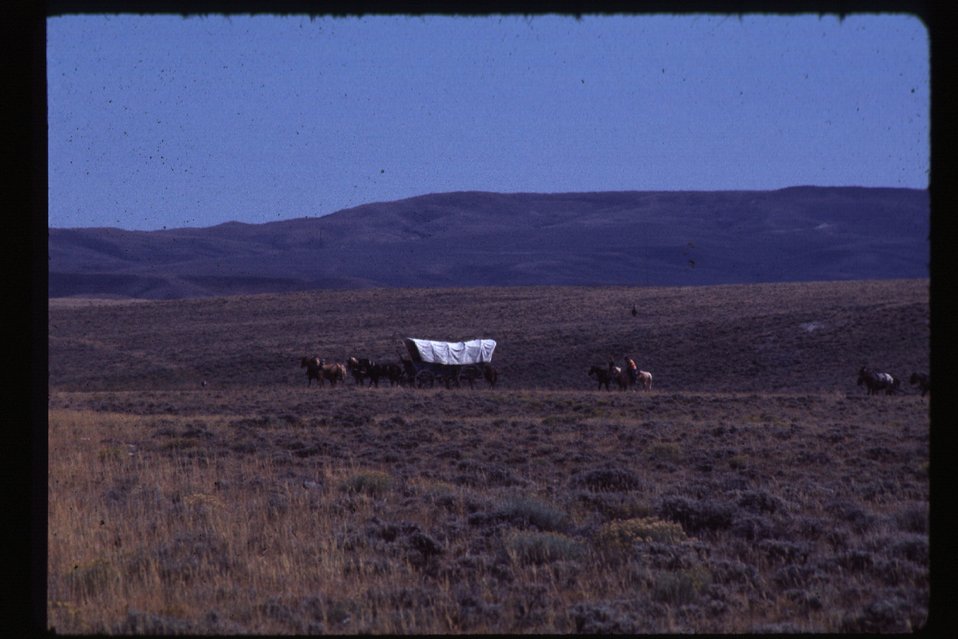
Wagon and horses Oregon Trail Reenactment USRD Upper Snake River District